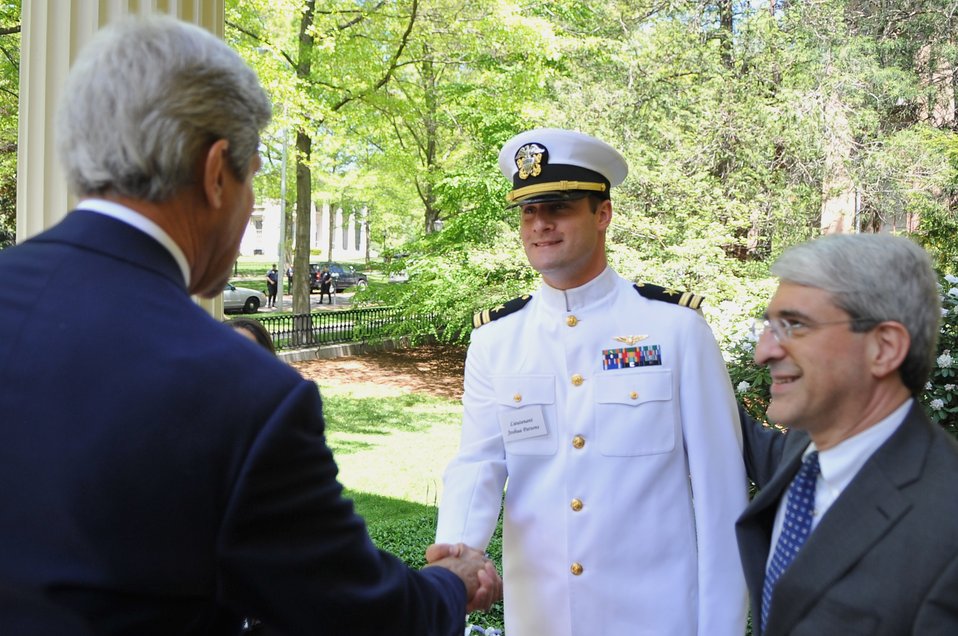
Secretary Kerry Shakes Hands With Navy Lieutenant Instructor at Yale University

U.S. Secretary of State John Kerry, who left Yale University in 1966 to become a Lieutenant in the U.S. Navy, shakes hands with Lieutenant Josh Parsons, currently a Naval Science Instructor at the school in New Haven, Connecticut as the Secretary arrives to deliver Class Day remarks on May 18, 2014.